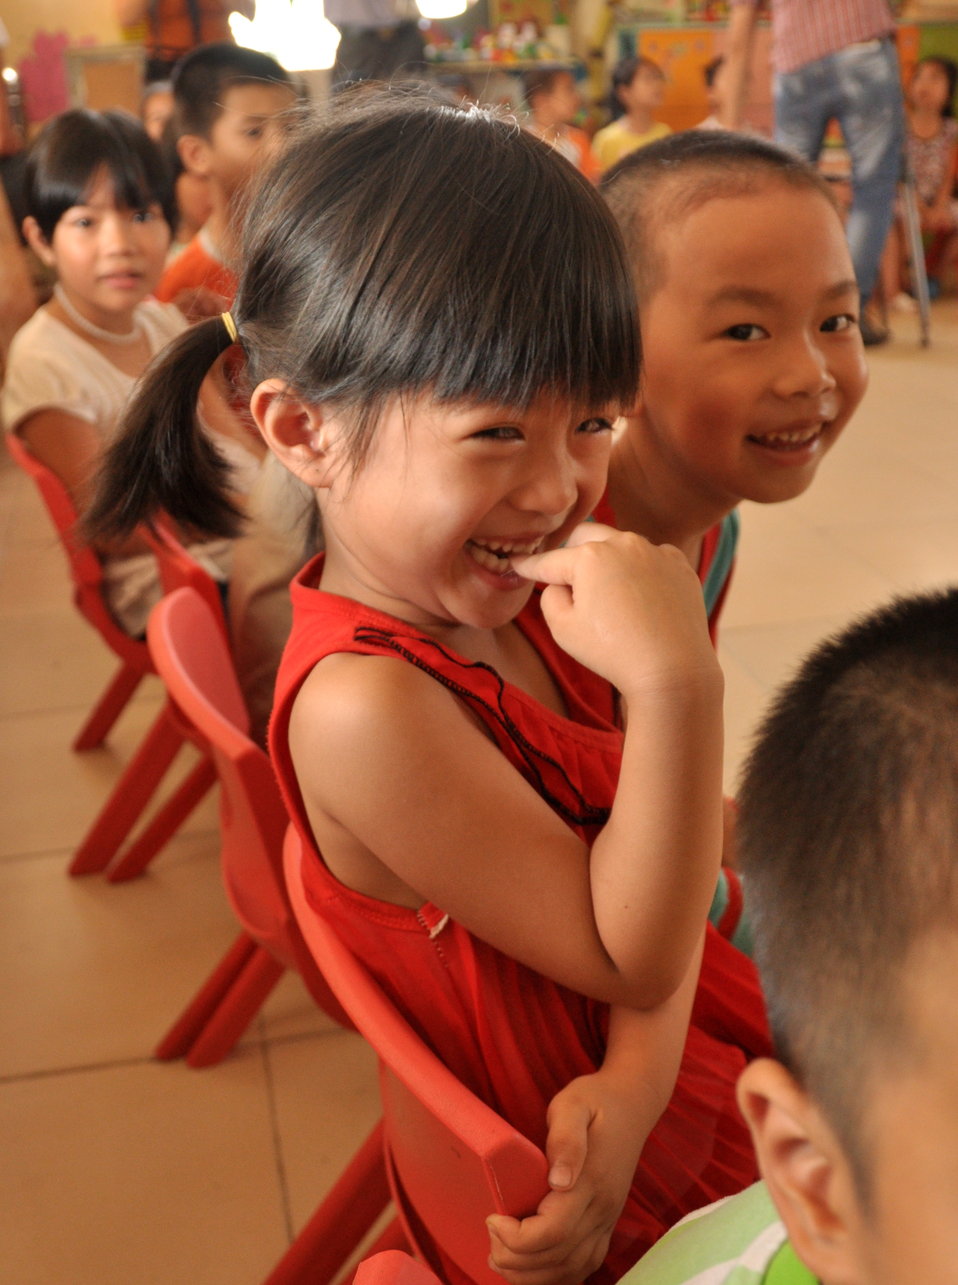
USAID Delivers Deworming Medication to Kindergartners in Nam Dinh Province

Children of Vietnam's Nam Dinh Province receive deworming medicine in a program supported by USAID and World Vision Australia.
June 1, 2013